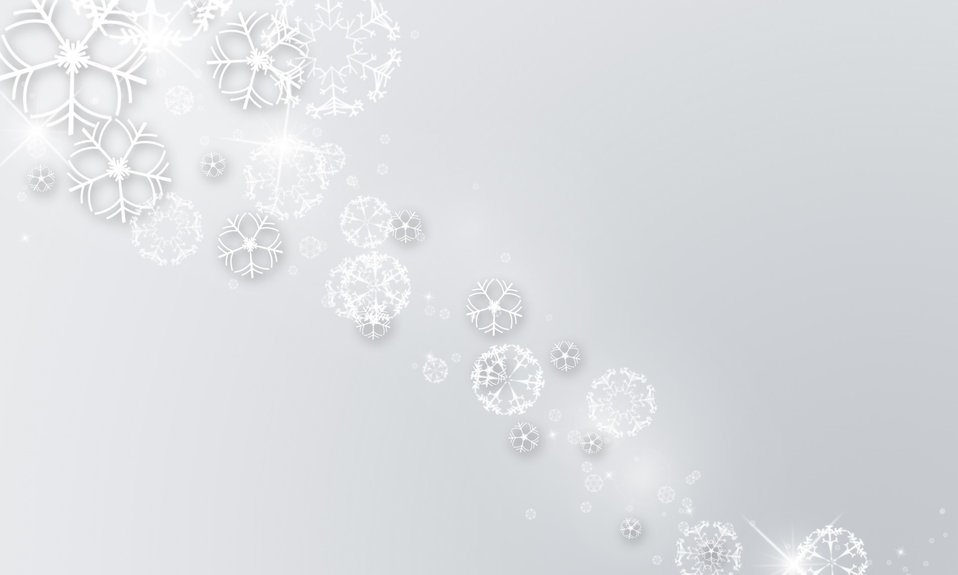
Silver christmas wallpaper

Grey christmas wallpaper.